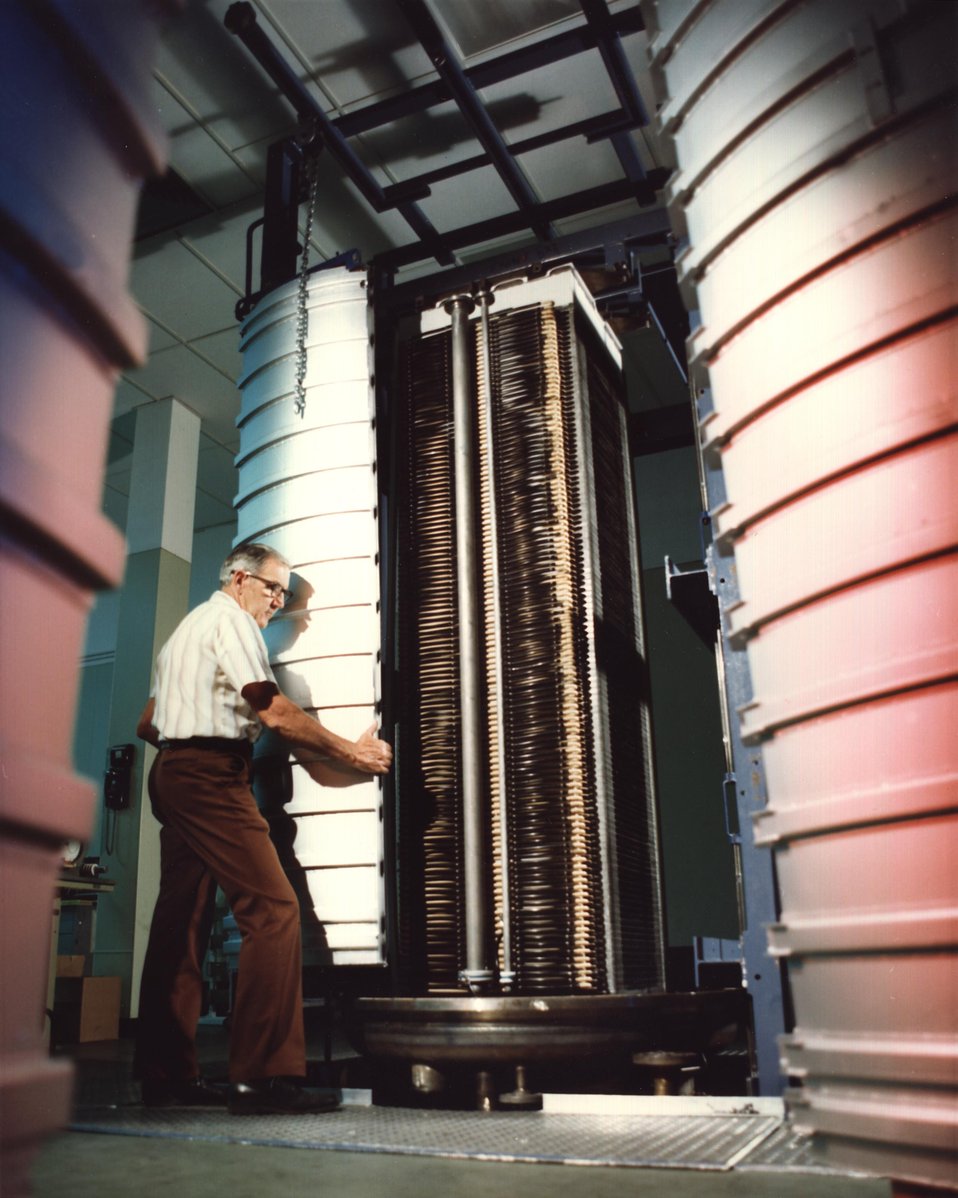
WORKMAN INSTALLING A REACTANT MANIFOLD ON A FUEL CELL FOR THE 4.8-MW DEMONSTRATOR.

HYDROGEN, A FUEL CELL POWER SECTION IN WHICH THE PROCESSED FUEL AND AIR REACT TO GENERATE DC POWER, AND AN INVERTER IN WHICH THE DC IS CHANGED TO AC. THIS TYPE OF POWER PLANT IS ESPECIALLY SUITED TO URBAN AND OTHER DENSELY POPULATED AREAS BECAUSE IT IS A MODULAR SYSTEM WHICH IS EASY TO TRANSPORT BY TRUCK AND ASSEMBLE IN A SMALL AREA. OTHER ADVANTAGES ARE ITS ALMOST NOISELESS OPERATION, LACK OF POLLUTION, AND ABILITY TO OPERATE WITHOUT LARGE QUANTITIES OF WATER. THE 4.8-MW FUEL CELL POWER PLANT IS BEING INSTALLED IN NEW YORK CITY AND WILL EVENTUALLY BE INTEGRATED INTO THE CONSOLIDATED EDISON UTILITY NETWORK.